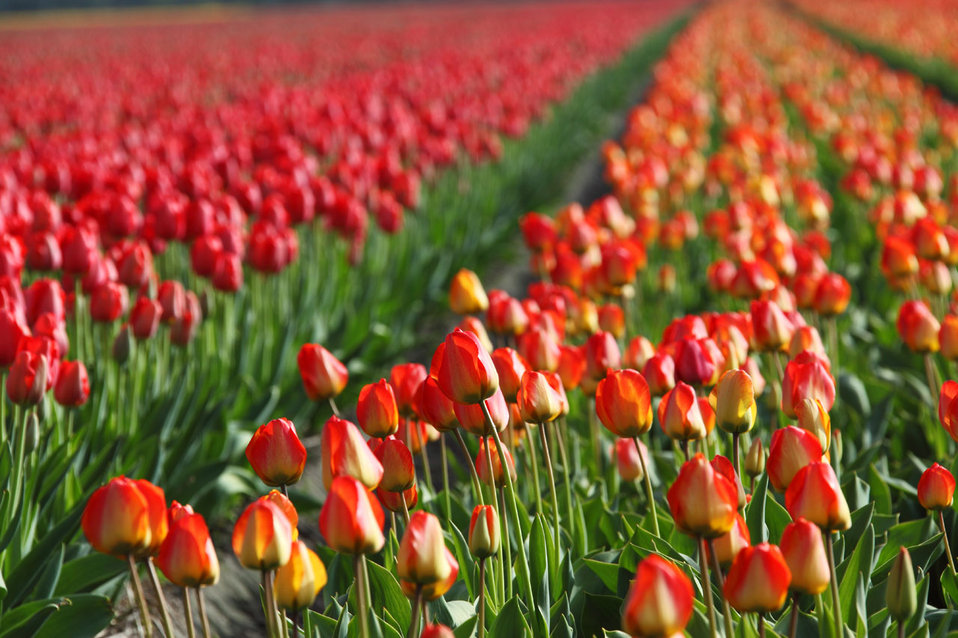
Tulip field in holland.